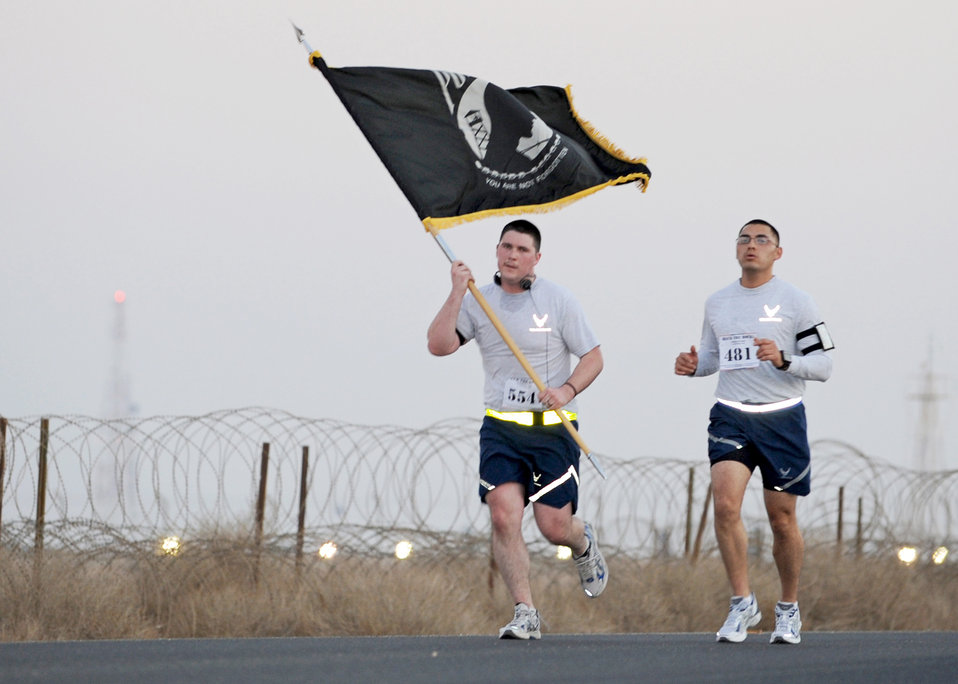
Running the Rock

At an air base in Southwest Asia, Airmen from the 386th Air Expeditionary Wing carry the POW/MIA flag Nov. 11, 2010, while participating in